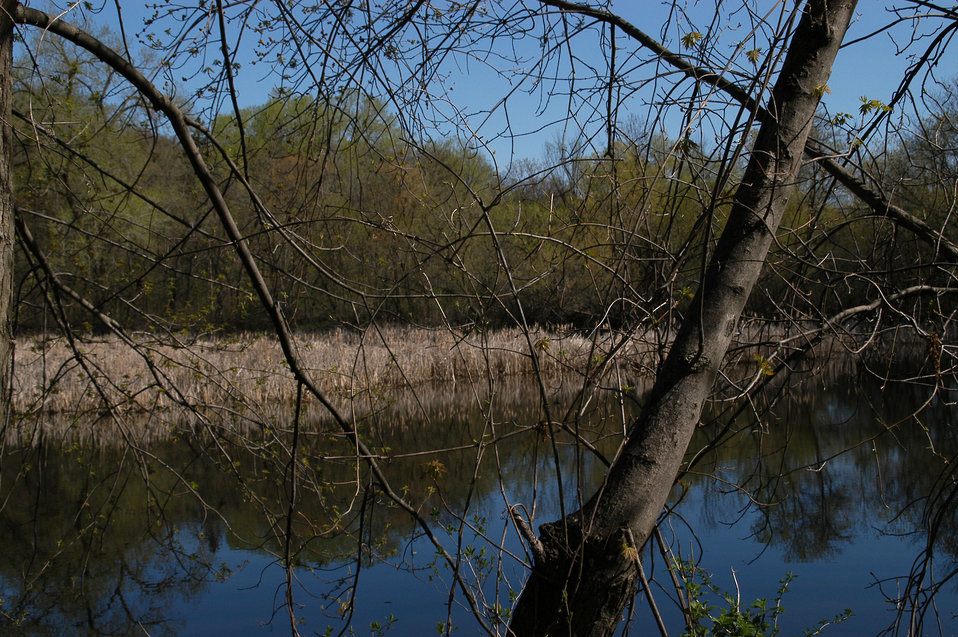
Welcome Back Spring!

Youth Fishing Day was kicked off by a beautiful Friday morning.